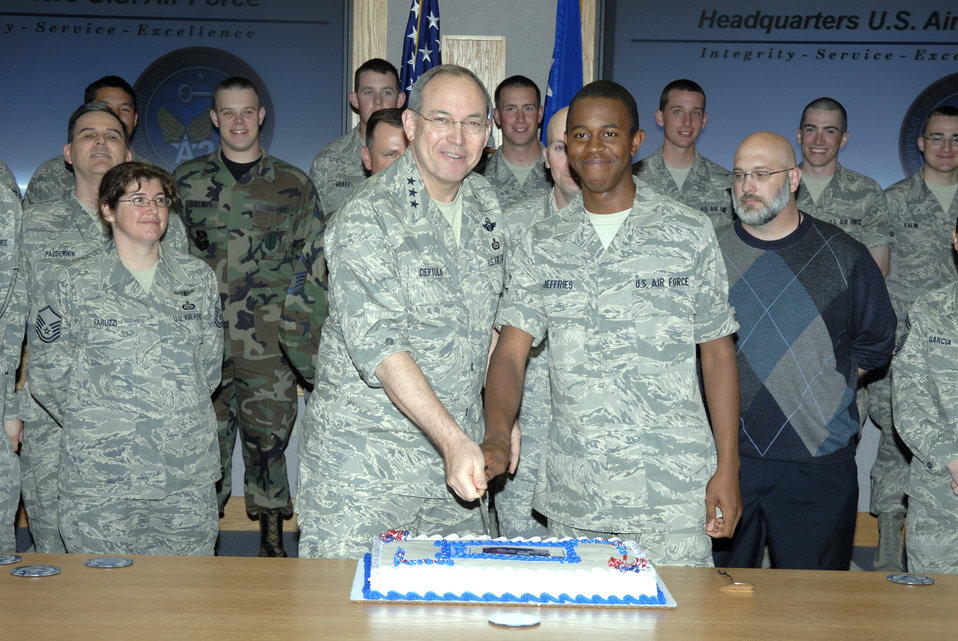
ISR leader shares future of intelligence field

Lt. Gen. David Deptula, deputy chief of staff for intelligence, surveillance and reconnaissance, and Airman Basic John Jeffries, a network intelligence analysis student with the 316th Training Squadron, cut a cake April 16 inaugurating the first class to enter the Intelligence Fundamentals Course at Goodfellow Air Force Base, Texas.